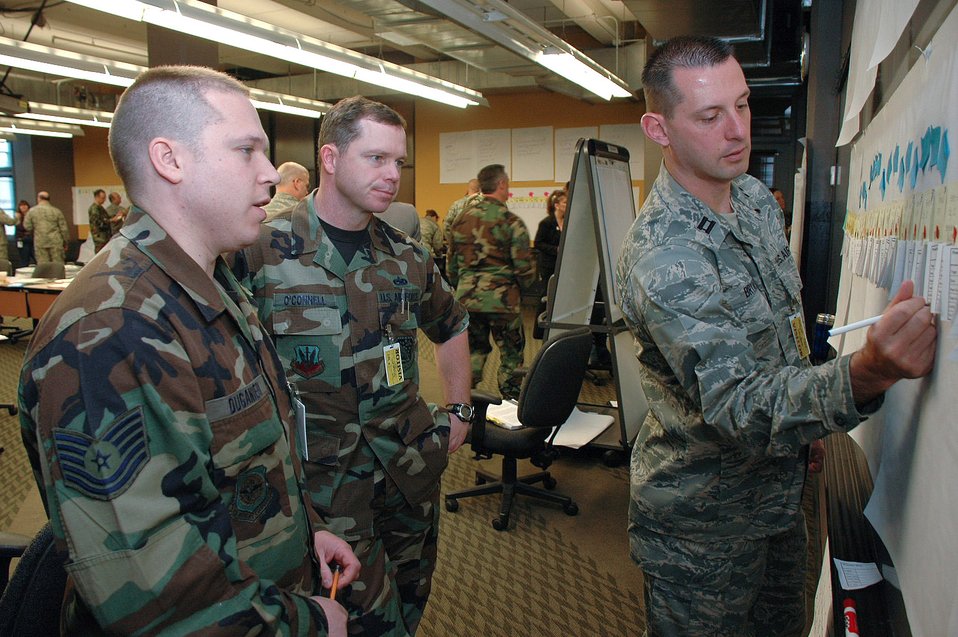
Guard, Harley-Davidson join forces to improve processes

Tech. Sgt. Michael Duganieri, Master Sgt. Sean O'Connell and Capt. Gregory Bryant discuss the value-stream mapping portion of the Air Force Smart Operations for the 21st century process May 7 at Harley-Davidson University in Milwaukee. Sergeant Duganieri is a 171st Air Refueling Wing crew chief with the Pennsylvania Air National Guard. Sergeant O'Connell is a 120th Fighter Wing maintenance group resource adviser with the Montana Air National Guard. Captain Bryant is a 121st Air Refueling Wing budget officer with the Ohio Air National Guard.